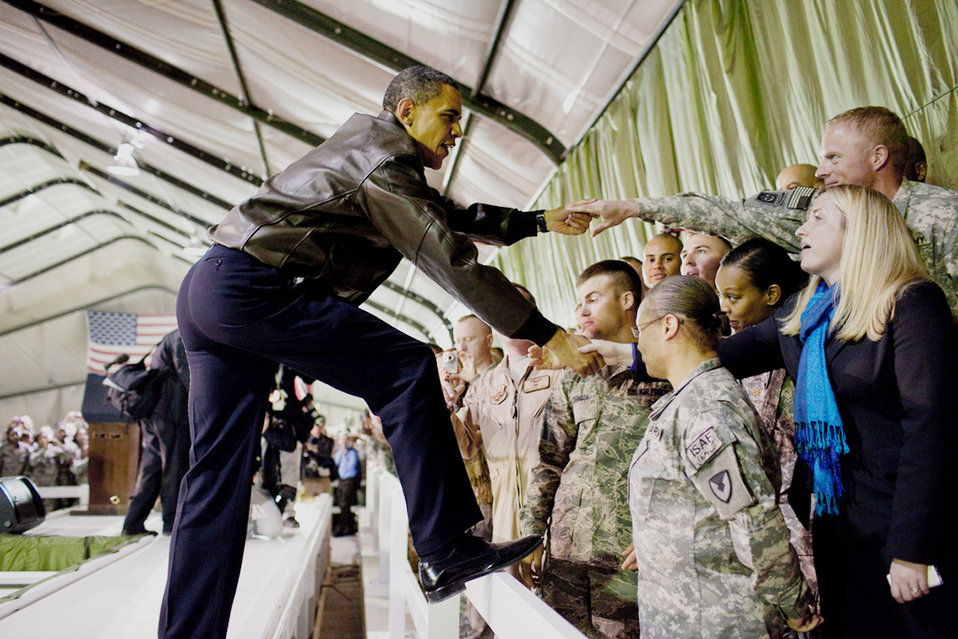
President Obama pays surprise visit to troops in Afghanistan

President Barack Obama greets U.S. troops March 28, 2010, at Bagram Airfield, Afghanistan.